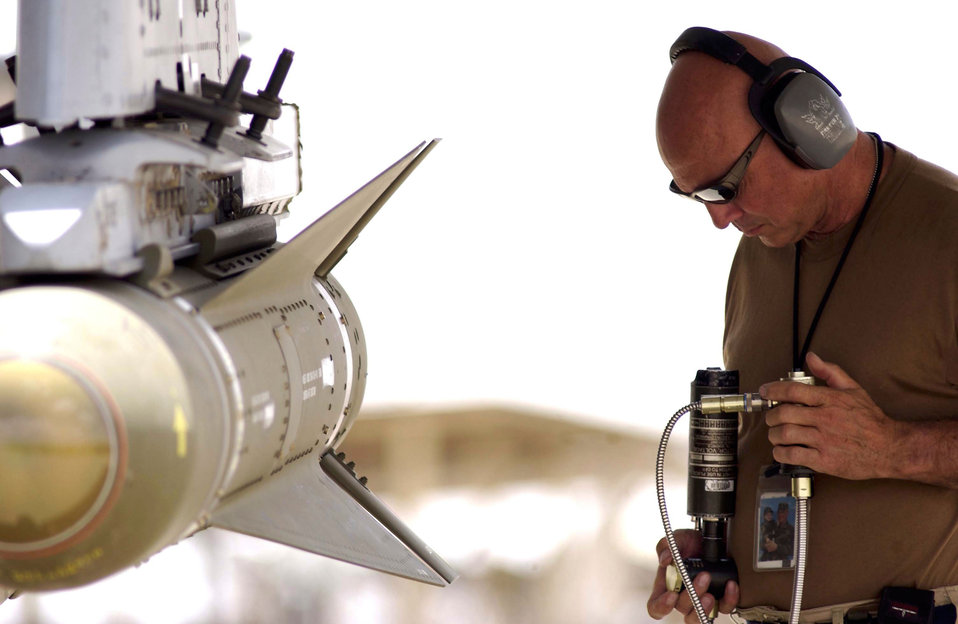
Arming up

KIRKUK AIR BASE, Iraq -- Tech. Sgt. Don West with the 303rd Expeditionary Fighter Squadron weapons crew, prepares to arm-up an A-10 Thunderbolt II prior to a mission on June 15. The A-10 unit, a detachment from the 407th Air Expeditionary Group, has been tasked to provide close air patrol and support to coalition forces throughout northern Iraq.